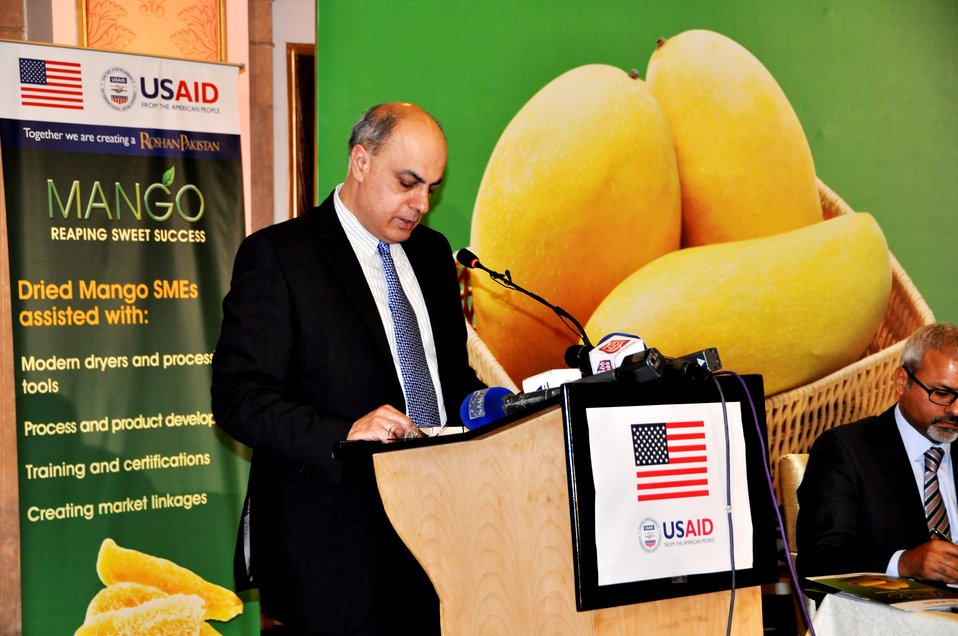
Mango Conference

Commerce Secretary Qasim Niaz